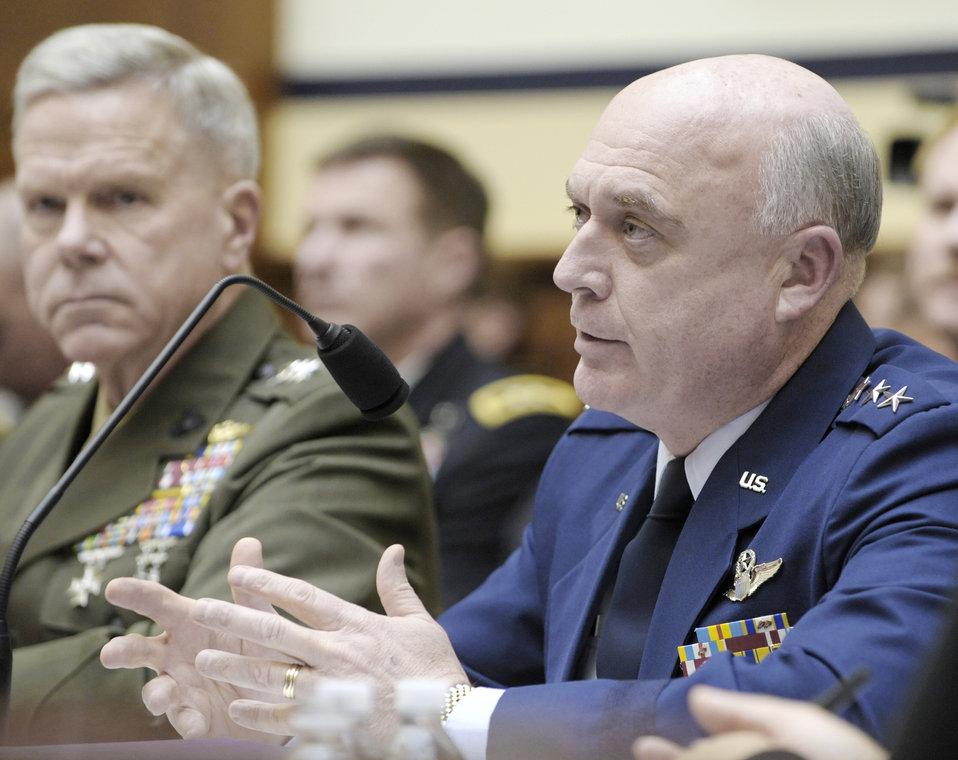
Testimony to the HASC

Air Force Vice Chief of Staff Gen. Carrol H.